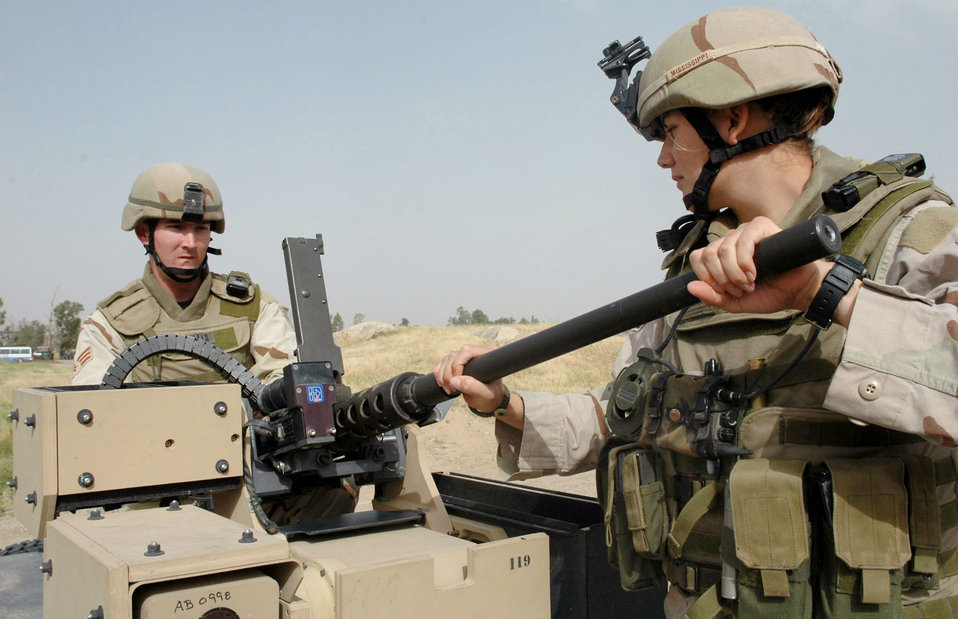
Gun assembly

Senior Airmen Jeffrey Oats and Kesha Snedeker assemble a machine gun attached to a Common Remote Operated Weapon Station, or CROWS, mounted on a vehicle at Kirkuk Air Base, Iraq, April 25, 2006. Airmen Oats and Snedeker are assigned to the 506th Expeditionary Security Forces Squadron.